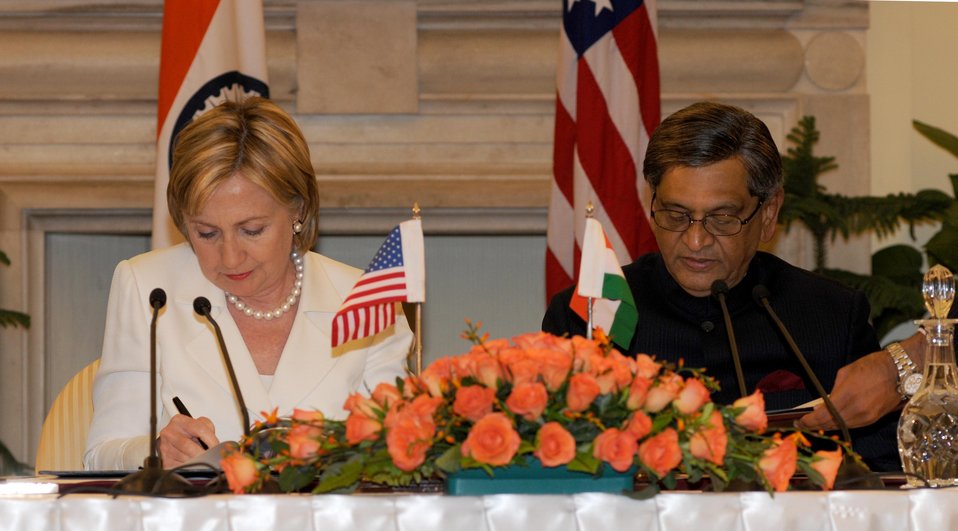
U.S., India Sign Bilateral Science and Technology Endowment Agreement

U.S. Secretary of State Hillary Rodham Clinton and Indian Minister of External Affairs S.M. Krishna sign a U.S.-India bilateral science and technology endowment agreement in New Delhi, India July 20, 2009.